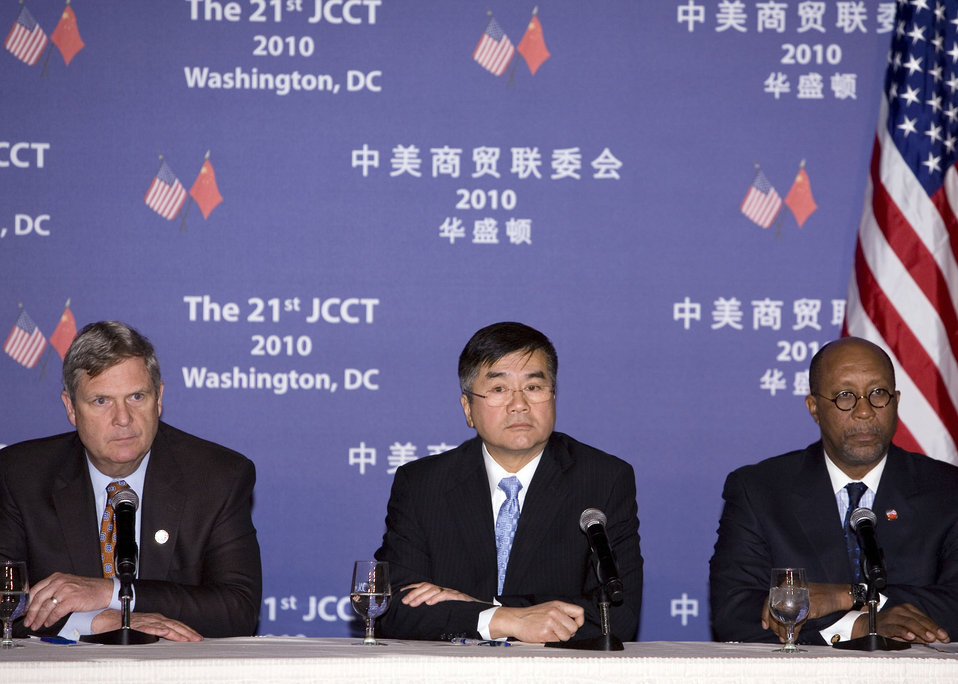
The 21st session of the U.S. - China Joint Commission on Commerce and Trade (JCCT) was co-chaired by (L to R) Agriculture Secretary Tom Vilsack, Commerce Secretary Gary Locke, and U.S. Trade Representative Ron Kirk, in Washington, D.C., on Wednesday, December 15, 2010. The JCCT resulted in an agreement with China for significant intellectual property rights enforcement initiatives, market opening, and revisions to its indigenous innovation policies that will help boost U.S. exports. USDA photo 10di1573-8380.